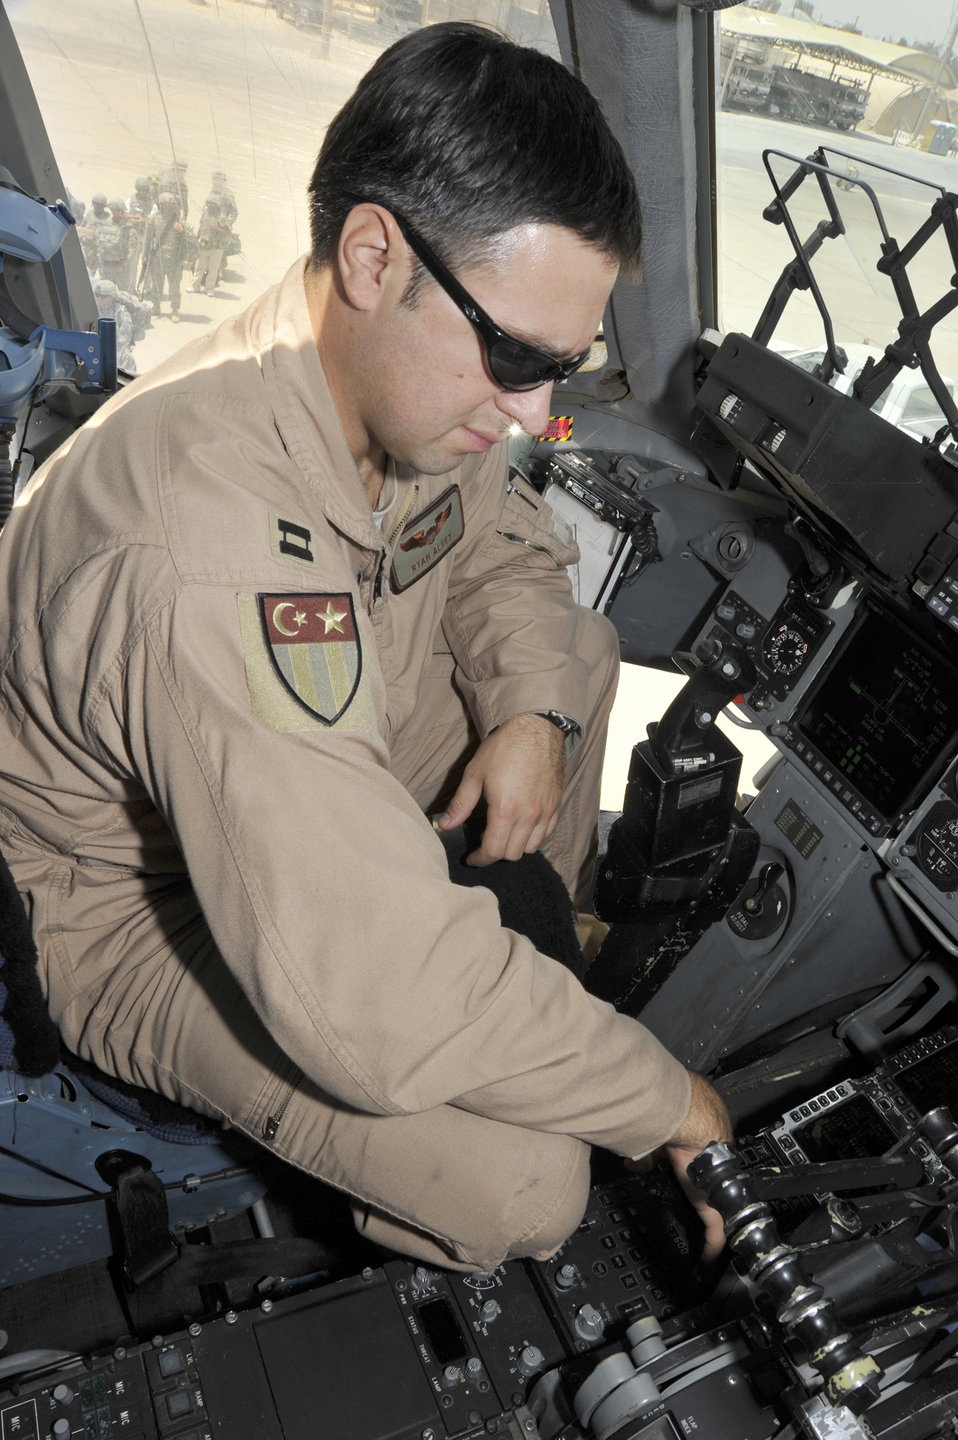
Air Force assets play vital role in Iraq Drawdown

Capt. Ryan Alvey goes through the pre-flight checklist on a C-17 Globemaster III July 10, 2010, at Sather Air Base, Iraq. Air Force assets are assisting with the scheduled Iraq drawdown to 50,000 troops by August 31, 2010. Captain Alvey is the 817th Expeditionary Airlift Squadron Aircraft Commander.